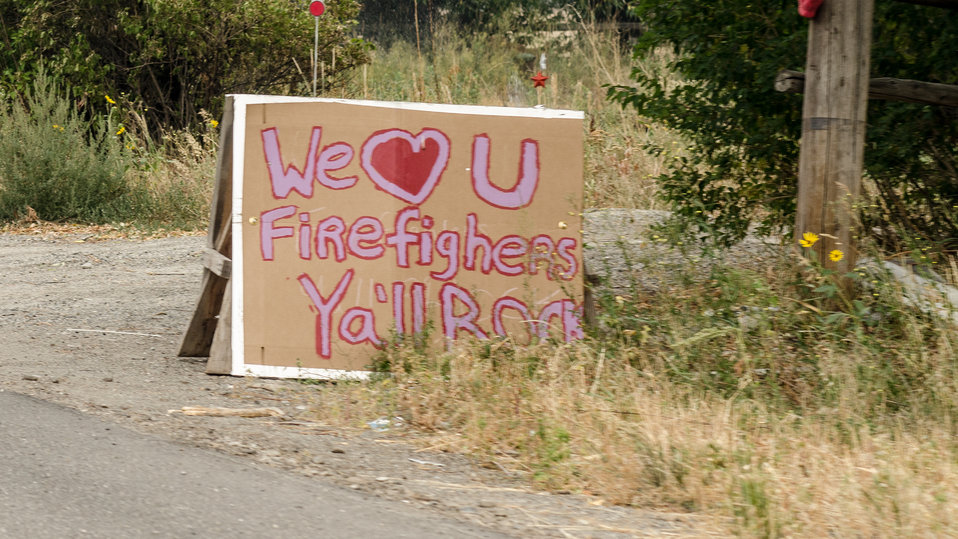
Signs of support posted by residents and businesses are seen throughout the Beaver Creek Fire Area, in Hailey (seen here), Sawtooth National Forest and Bureau of Land Management lands, on Wednesday, Aug 21, 2013.